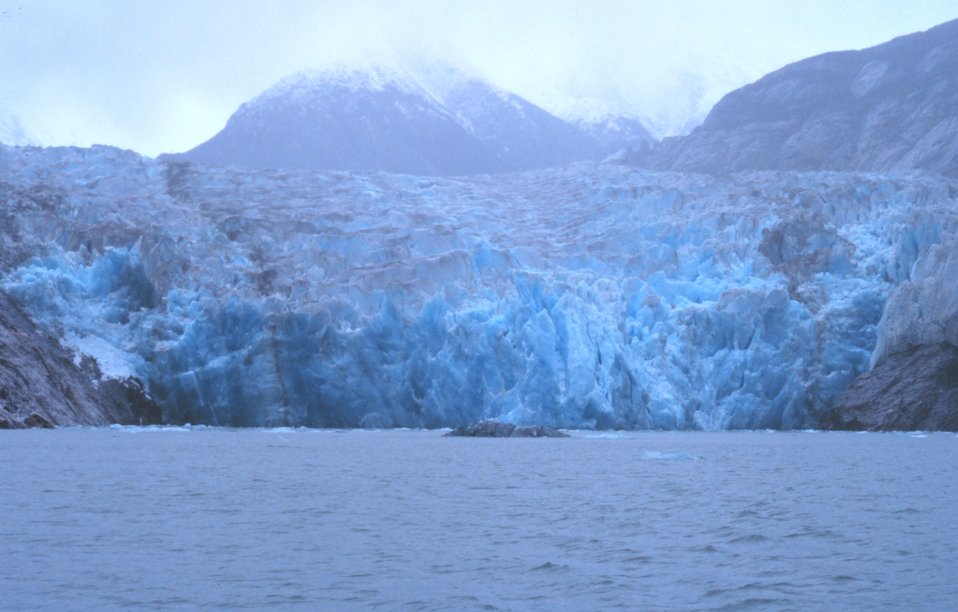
The Sawyer Glacier at the head of Tracy Arm Fjord